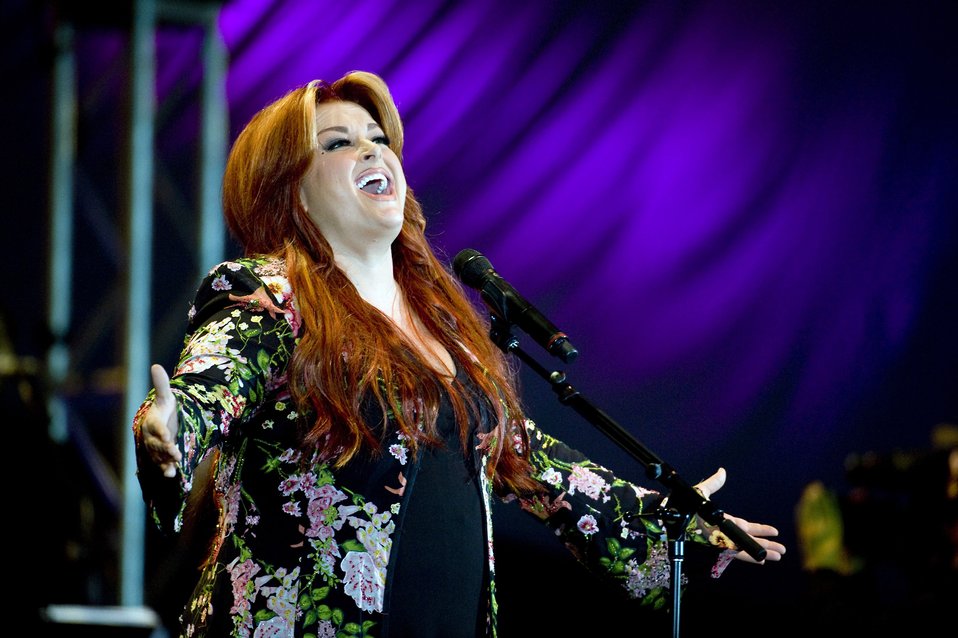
Wynonna headlines concert for military

Wynonna Judd performs for the military and civilian crowd at Alaska's Operation Gratitude concert June 27 at Elmendorf Air Force Base, Alaska. The concert was the official kick off to the